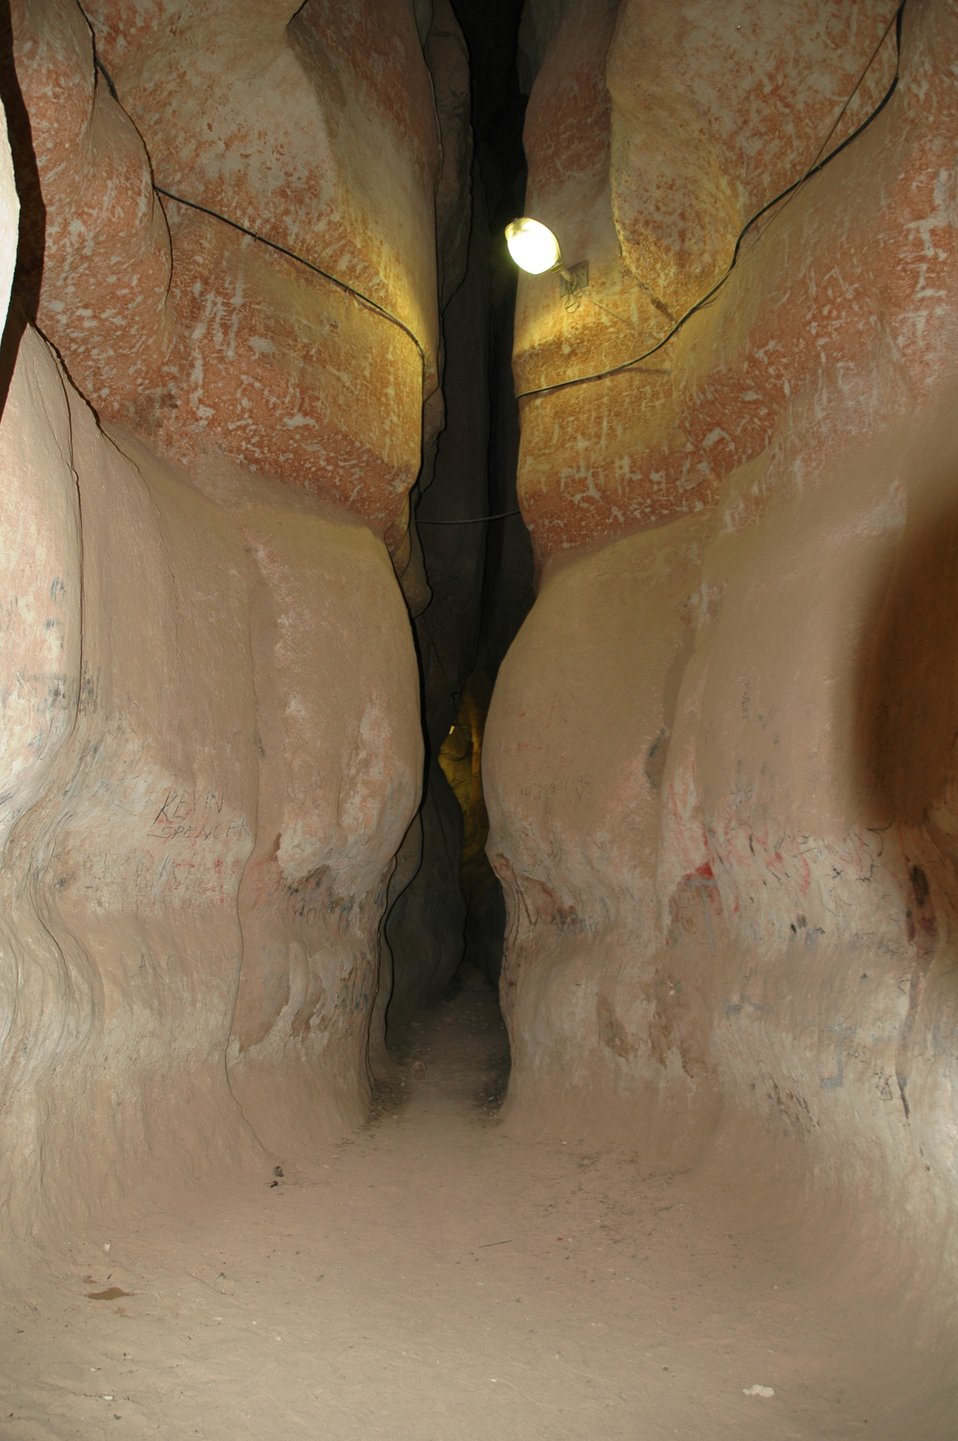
മലയാളം: ജബൽ അൽഗാര ഗുഹകളുടെ ഒരു ഉൾവശം